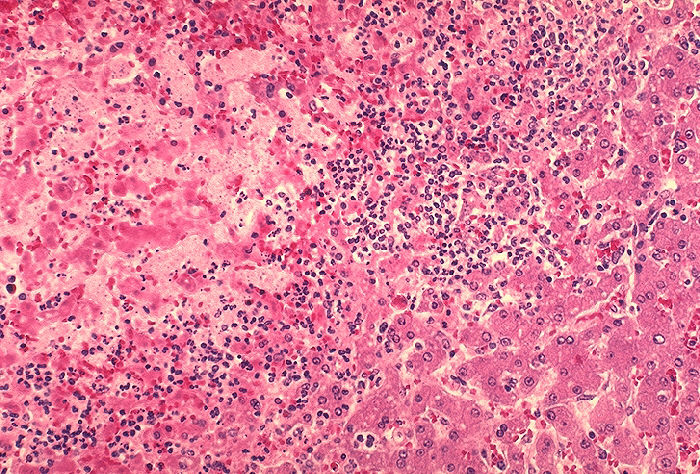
Histopathology of liver in fatal human plague.